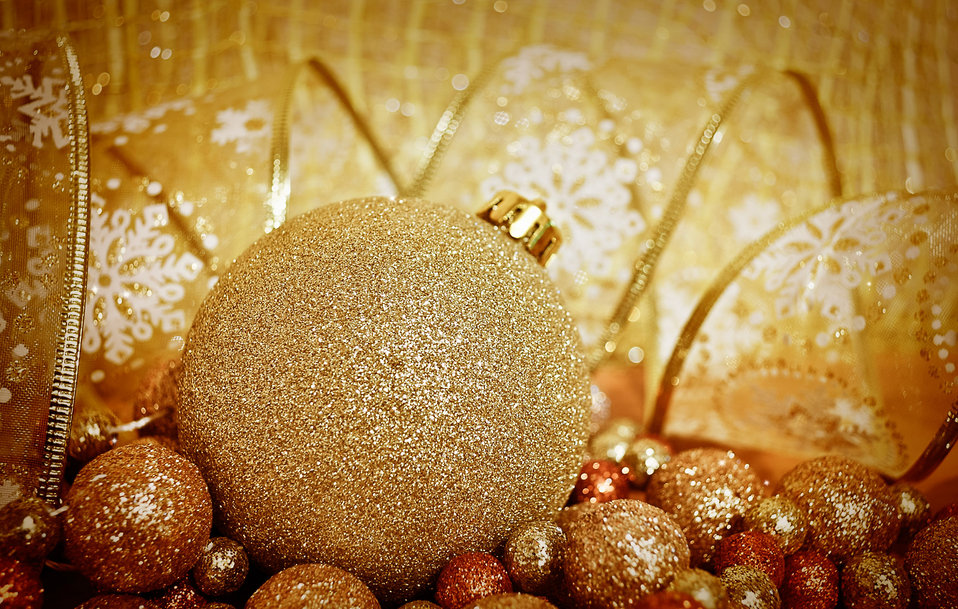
Christmas background

Christmas decorations.